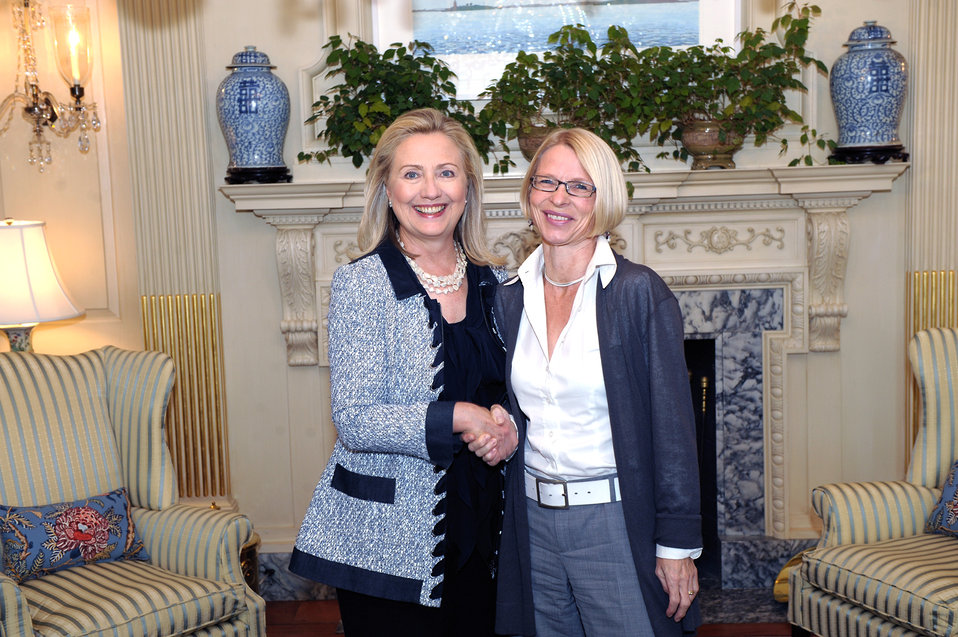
Secretary Clinton Meets With Swiss Ambassador to Iran Livia Leu Agosti

U.S. Secretary of State Hillary Rodham Clinton meets with Swiss Ambassador to Iran Livia Leu Agosti at the U.S. Department of State in Washington, D.C., on October 12, 2011.